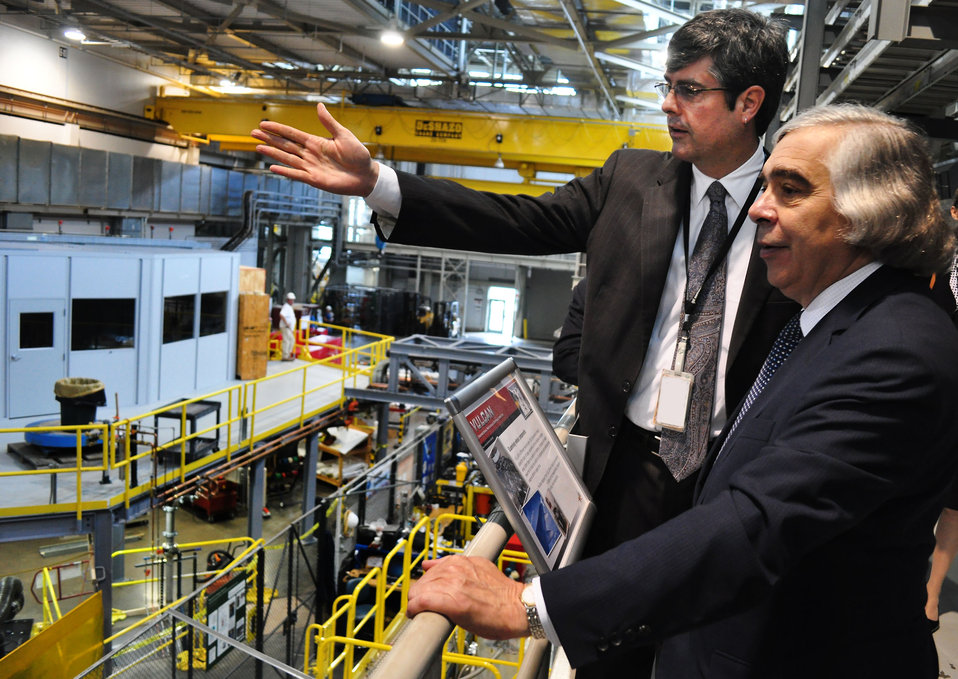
DOE Secretary of Energy Ernest Moniz in Oak Ridge

13-064 DOE photo Lynn Freeny 6-20-2013 Oak Ridge Tennessee